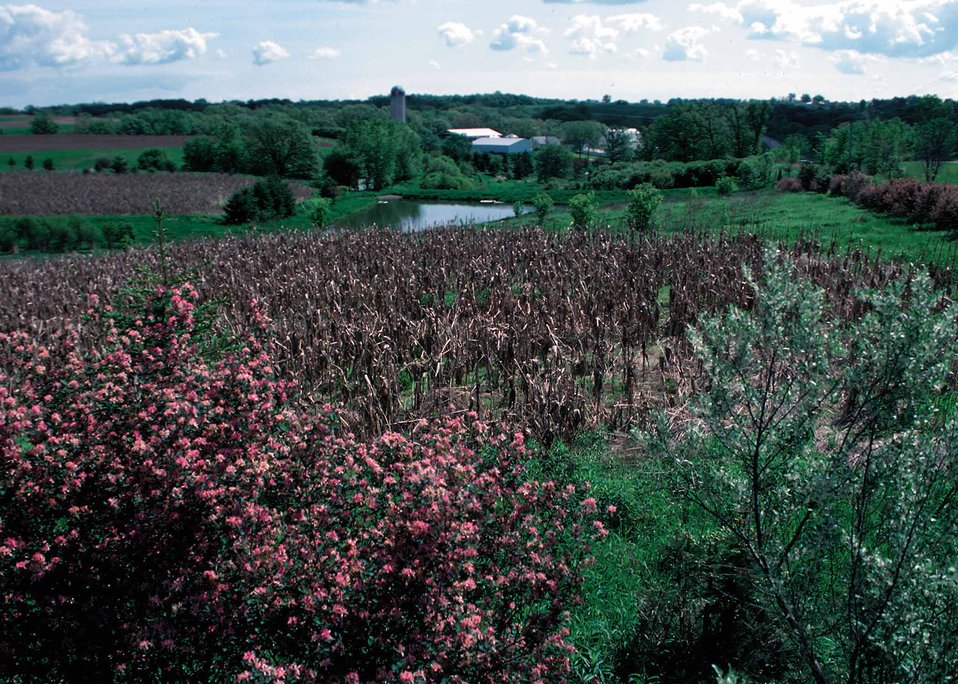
Wildlife area in Jackson County, Iowa, includes trees, shrubs, grasses, a pond and corn as a food plot.